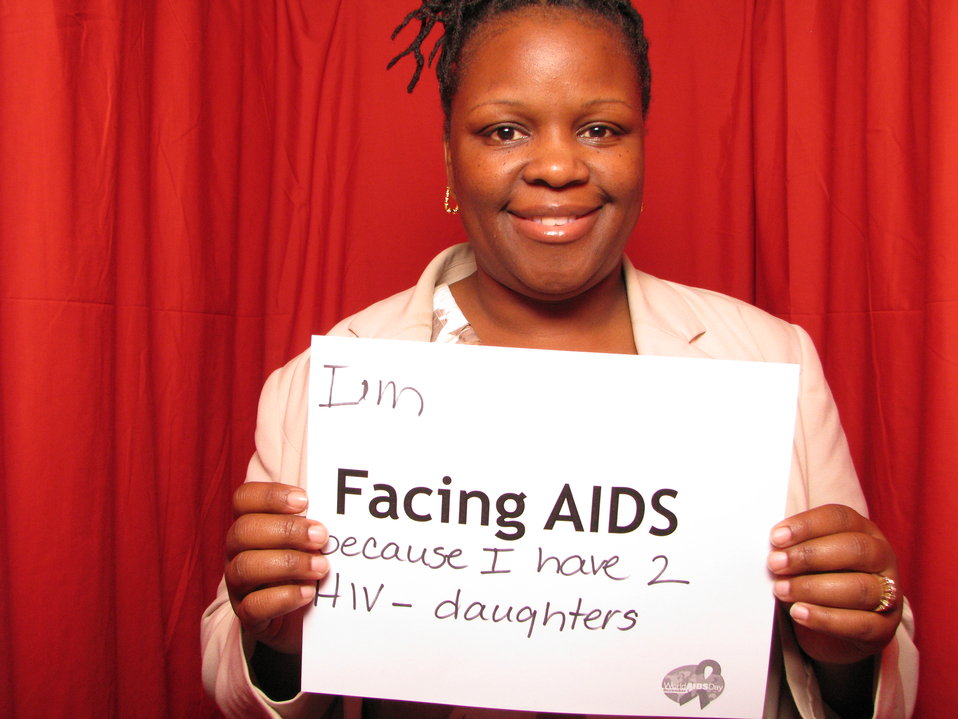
I'm FACING AIDS because I have 2 HIV- daughters.

From the AIDS.gov photo booth at the U.S. Conference on AIDS, September 2010 (Orlando, FL).